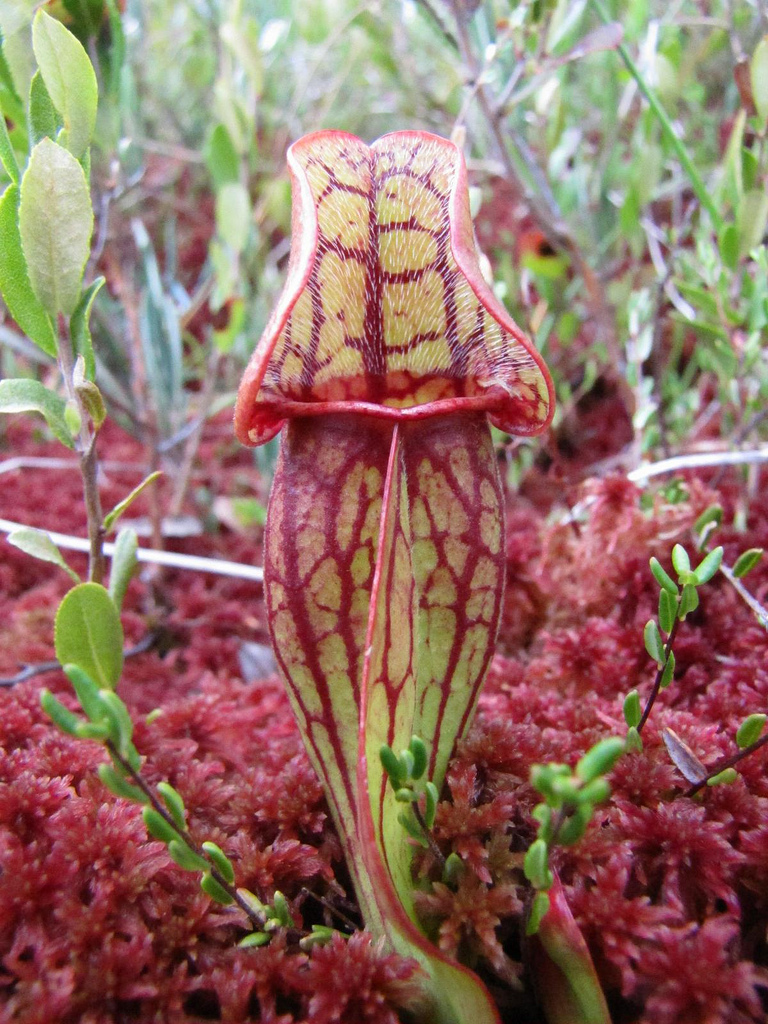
Photo of the Week – Purple Pitcher Plant (VT)

Photo of the Week - 6/25/12

Purple pitcher plants are common in bogs in and around the Nulhegan Basin and Pondicherry Divisions of the Silvio O. Conte National Fish and Wildlife Refuge.